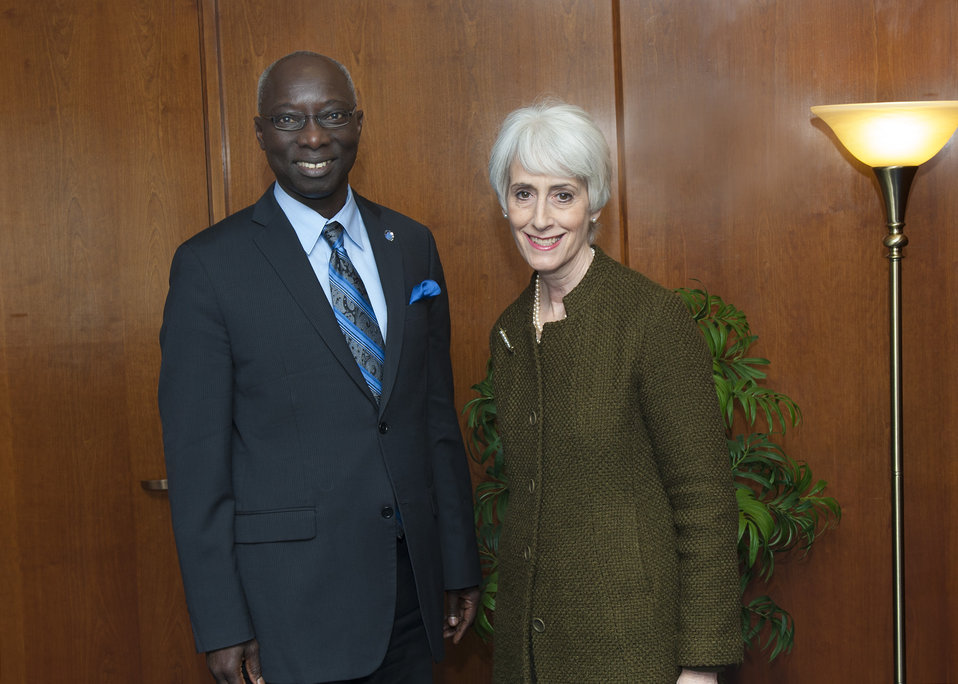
Under Secretary Sherman Meets With UN Special Adviser Dieng

Under Secretary for Political Affairs Wendy Sherman, right, pictured with UN Special Adviser on the Prevention of Genocide Adama Dieng, left, on March 26th, 2013, during consultations in Washington on U.S. and UN efforts on atrocity early warning, prevention and response.